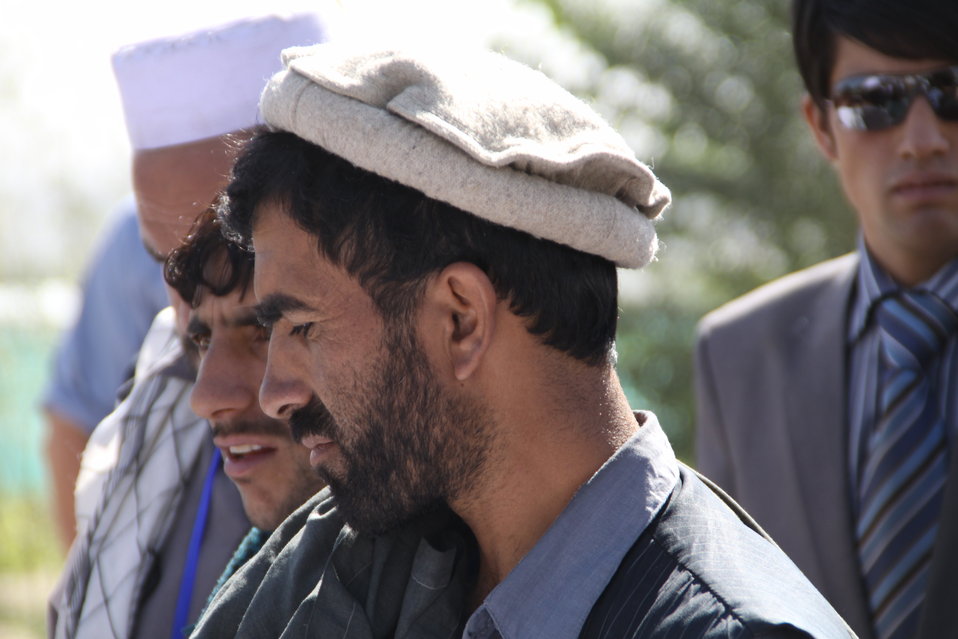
AVIPA Plus Wheat Seed Distribution 101005

US Ambassador Karl Eikenberry and USAID Acting Mission Director Kevin Brownawell joined the Minister of Agriculture, Irrigation and Livestock, H.E. Minister Mohammed Rahimi in signing a Memorandum of Understanding and distributing vouchers to area farmers for wheat and fertilizer.

US Ambassador Karl Eikenberry and USAID Acting Mission Director Kevin Brownawell joined the Minister of Agriculture, Irrigation and Livestock, H.E. Minister Mohammed Rahimi in signing a Memorandum of Understanding and distributing vouchers to area farmers for wheat and fertilizer.